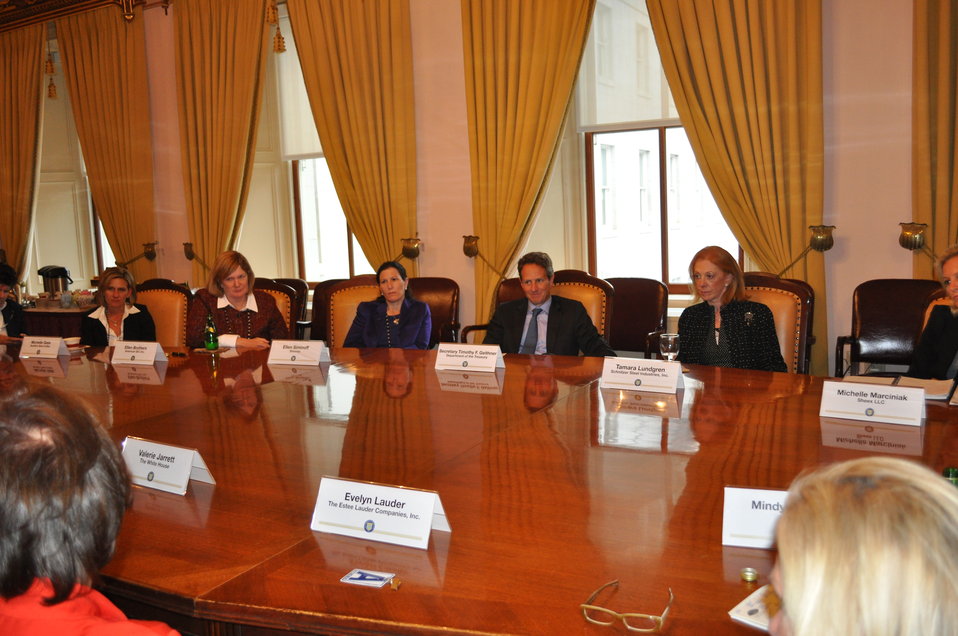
Women Business Leaders, 10/05/2010

On Tuesday afternoon, Secretary Geithner hosted a group of prominent women business leaders at Treasury for a discussion on the state of the economy, industry trends, trade and U.S. competitiveness.